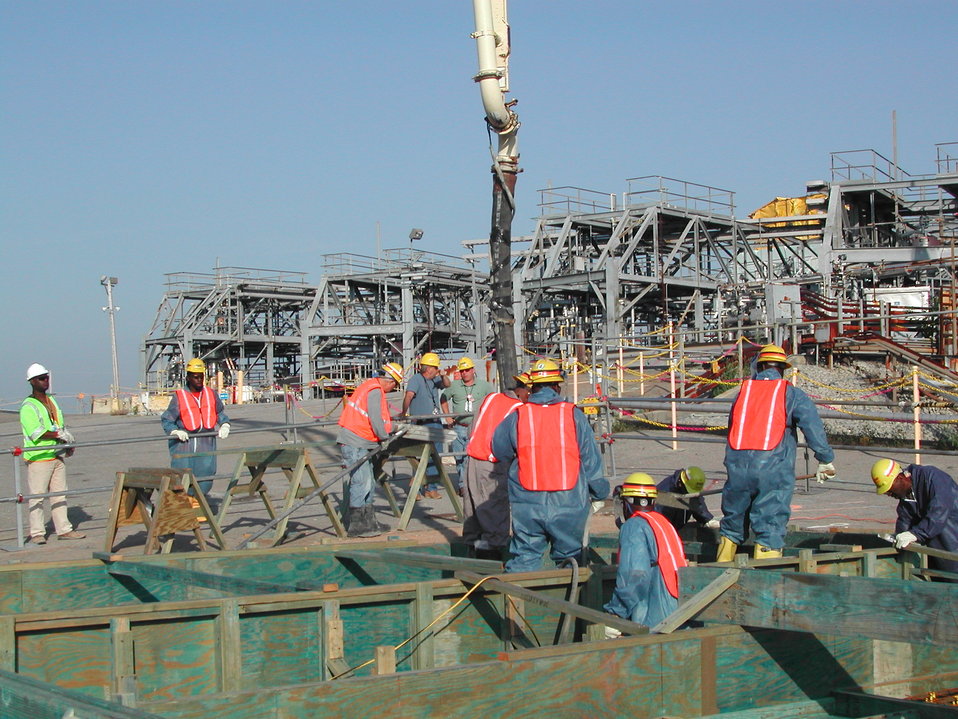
Savannah River Site Enters Final Recovery Act Year with Many Accomplishments

In just a year and a half, the Recovery Act’s $1.6 billion investment in Savannah River Site (SRS) has sparked dramatic progress, putting thousands of people to work to complete cleanup projects that are safely processing nuclear waste for storage and reducing the footprint of the Cold War-era at SRS.